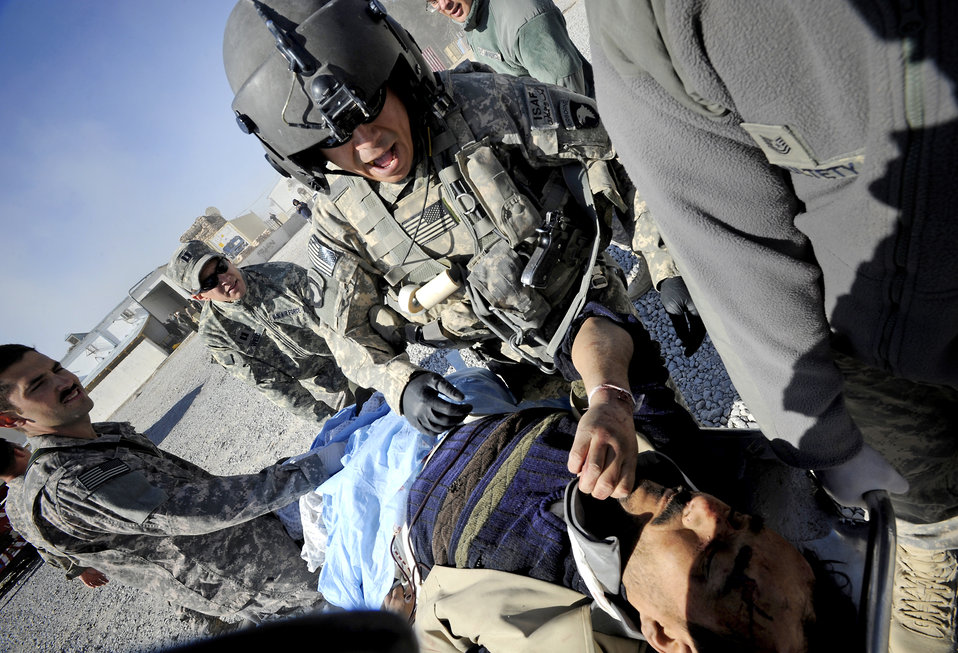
Nine medevaced from PRT Zabul after tragic accident

A flight medic assesses a patient before loading him onto a medevac helicopter, Nov. 30, 2010, at Forward Operating Base Smart, Afghanistan.